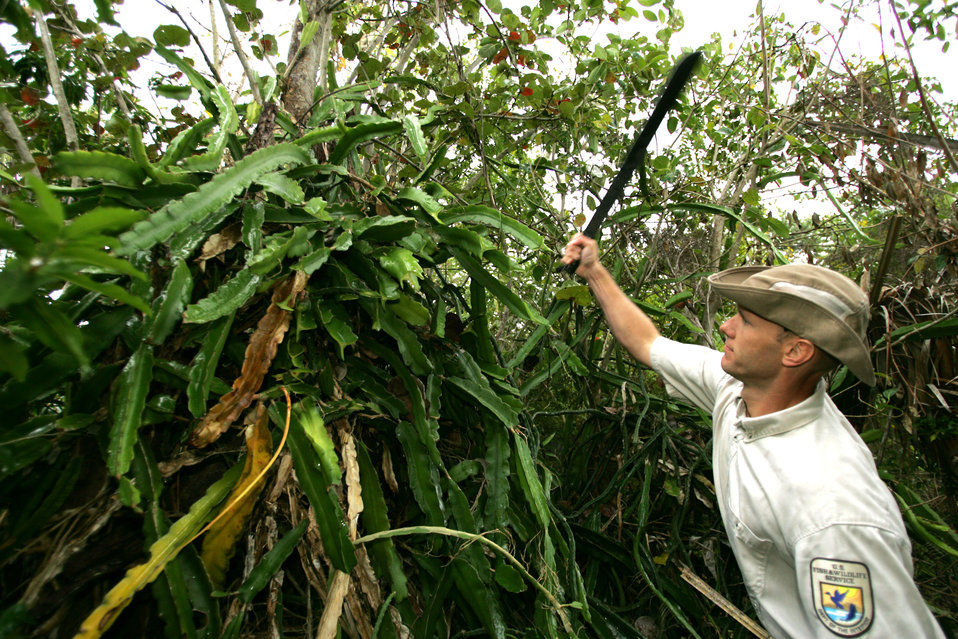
cereus

A U.S. Fish and Wildlife Service employee inspects Night Blooming Cereus, an exotic invasive species on J.N. Ding Darling National Wildlife Refuge in Florida.